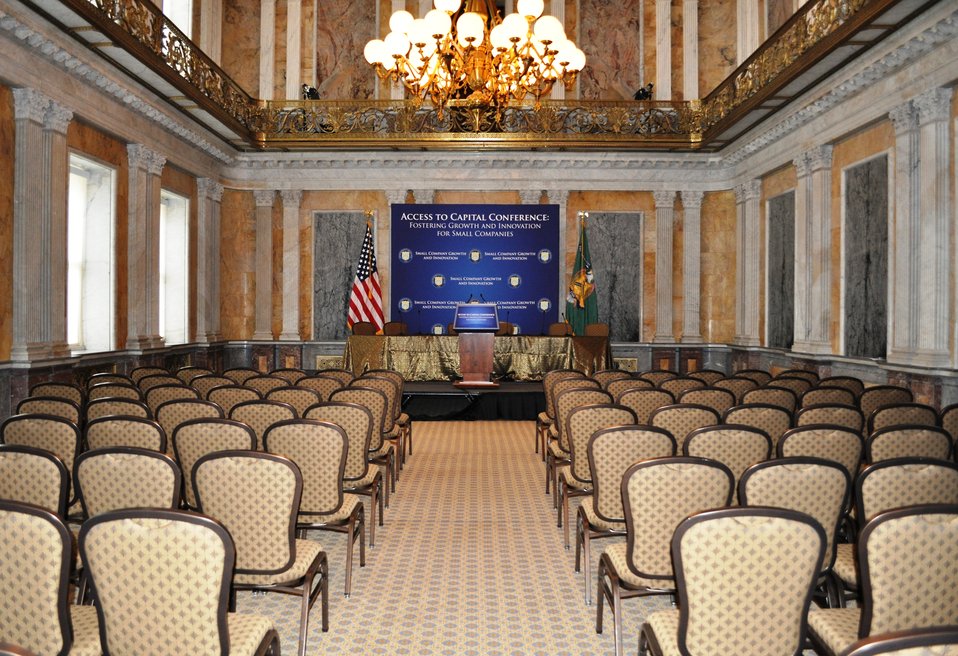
Access to Capital Conference - 3/21/11

The stage is set for tomorrow's Access to Capital Conference in Treasury's Cash Room.